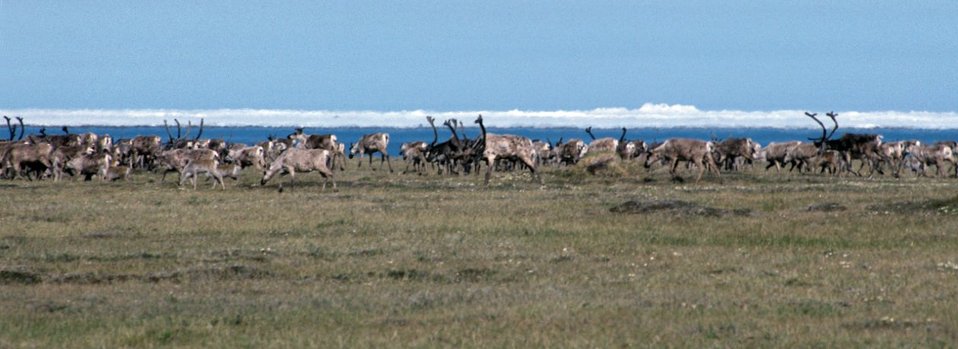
1002 Area: Caribou and sea ice

Caribou in the 1002 Area of the Arctic Refuge coastal plain, with the Beaufort Sea and icebergs in the background.